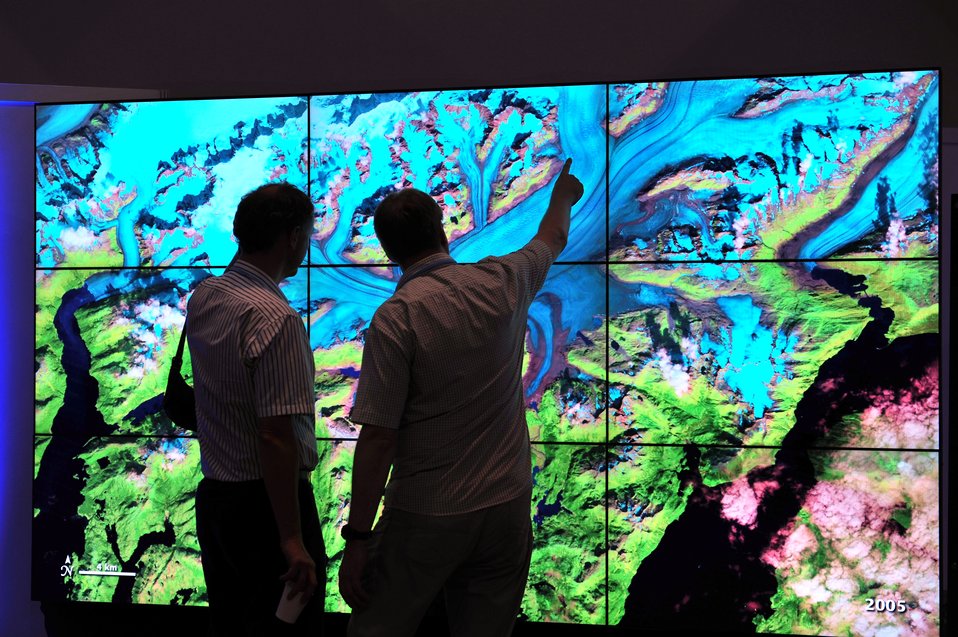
European space scientists view the NASA data visualizations at the U.S. Center at the 18th Session of the Conference of the Parties to the UN Framework Convention on Climate Change (COP-18) in Doha, Qatar, November 30, 2012.